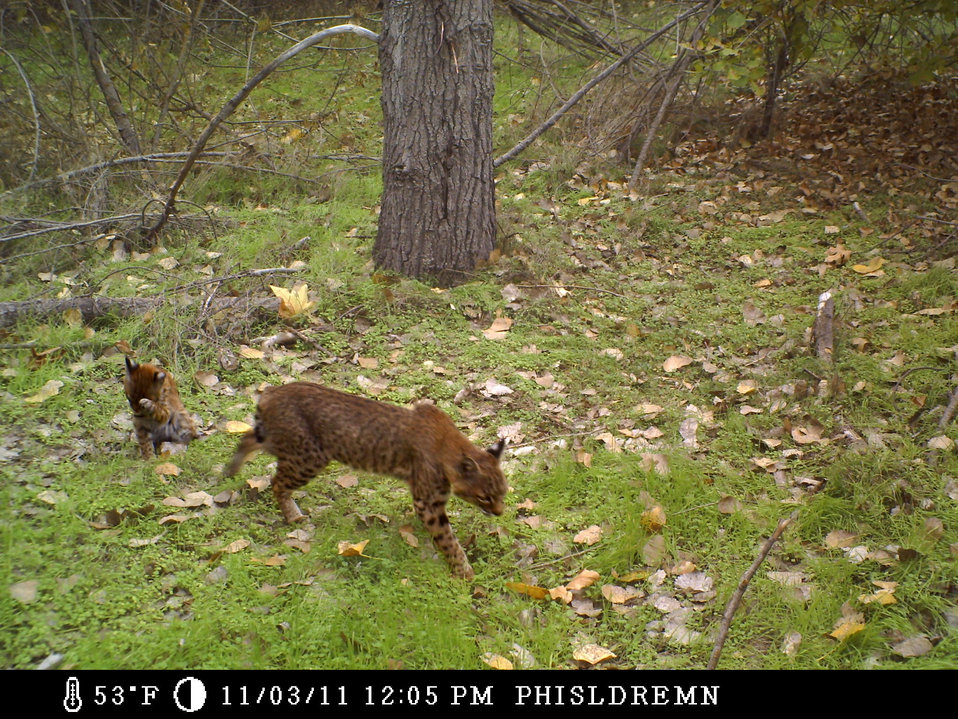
I'd better investigate...

trail camera photo
Sacramento River National Wildlife Refuge, CA